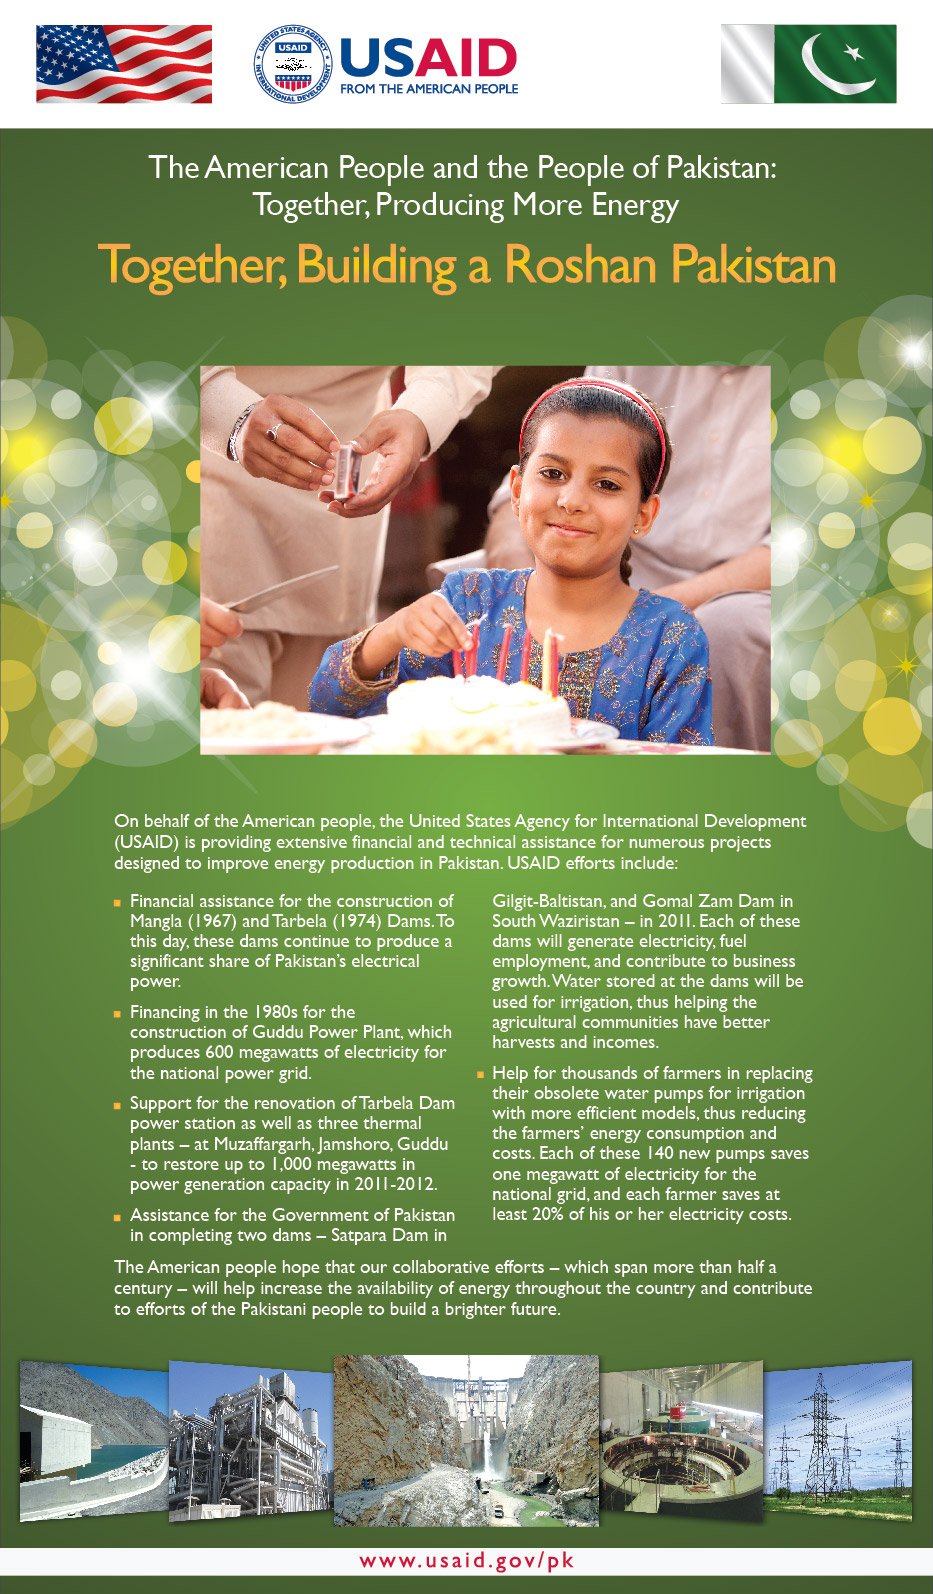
Together, Producing More Energy in Pakistan